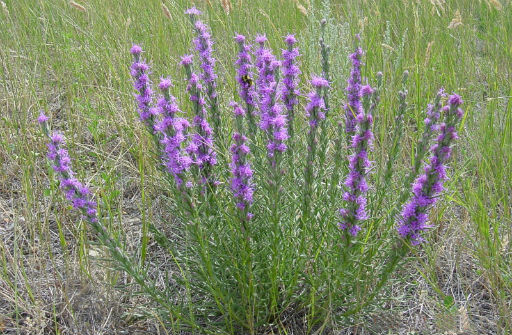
Dotted gayfeather (Liatris punctata) blooms from July to September and is highly drought-resistant.